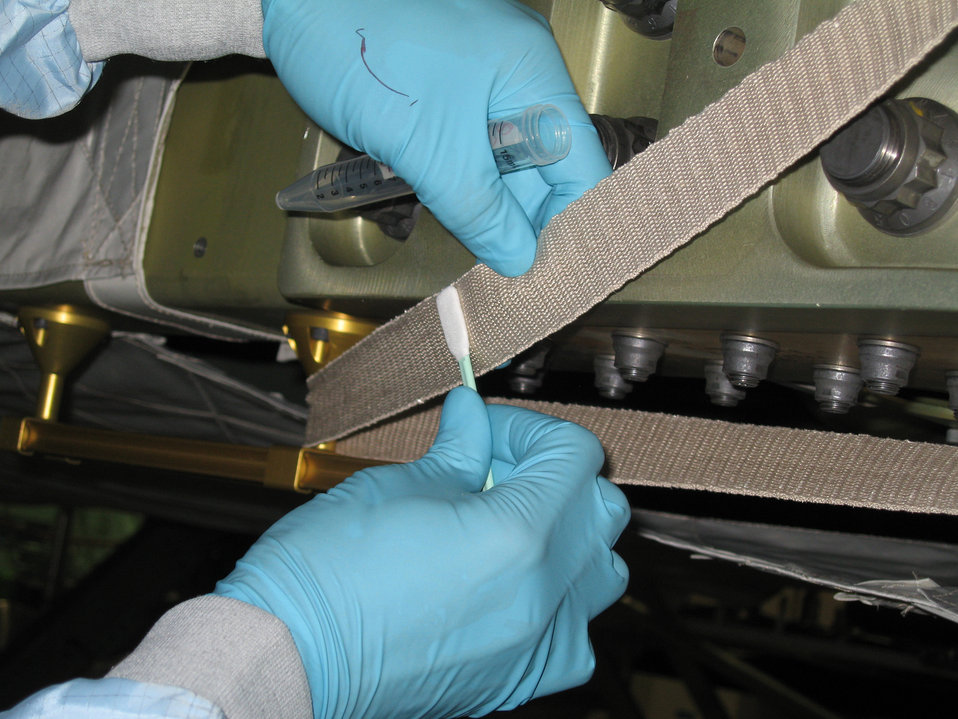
Indoor Microbial Sampling

A technician swabs for microbes on a mockup of the interior of the International Space Station at NASA's Kennedy Space Center in Florida. This was done as part of a program to develop microbial sampling procedures for spaceflight.